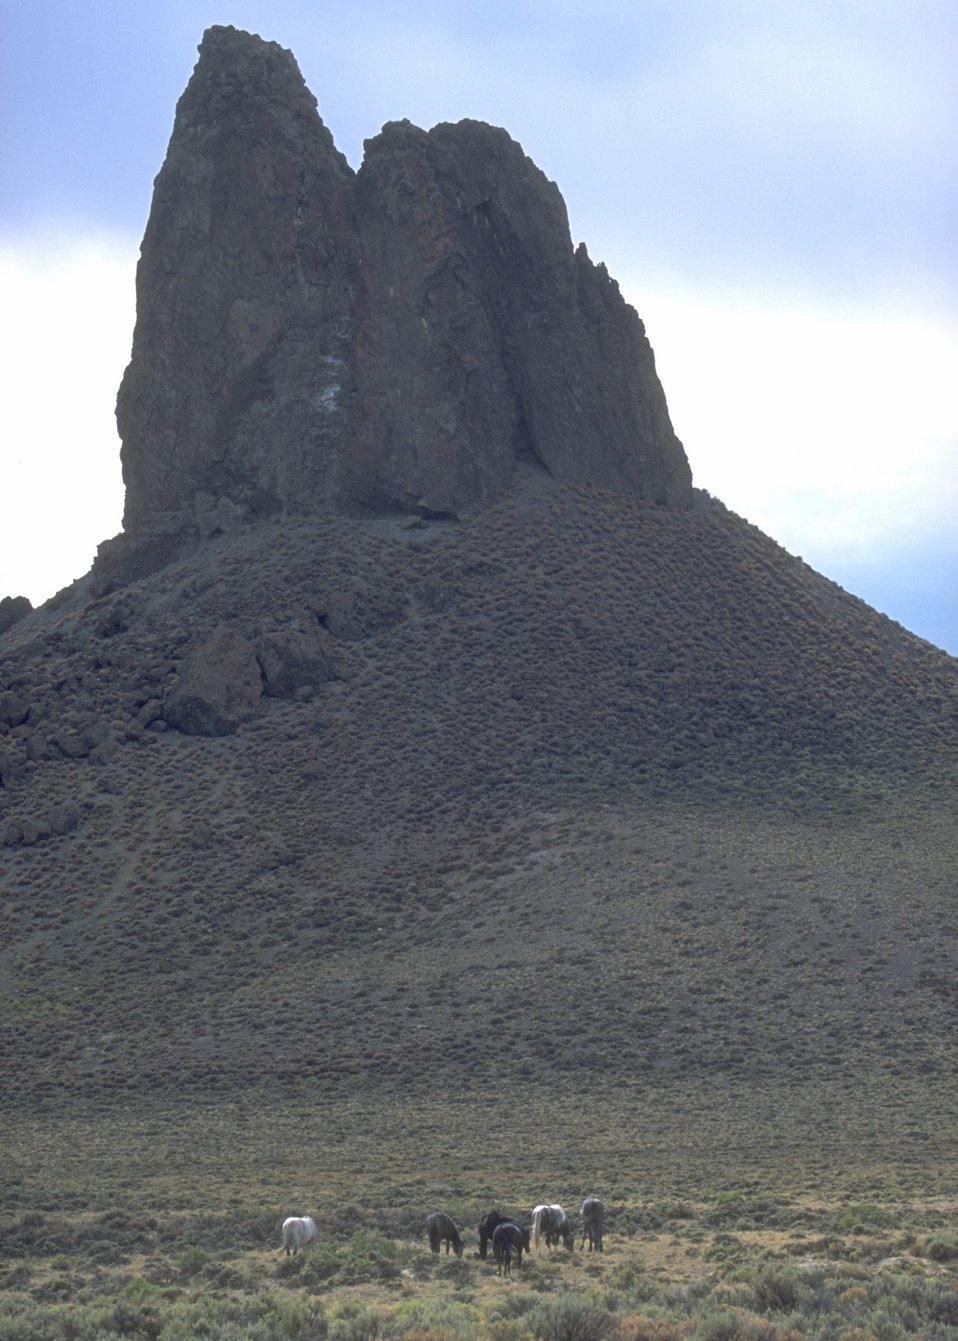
Wild Horses and Boar's Tusk, Rock Springs Field Office.